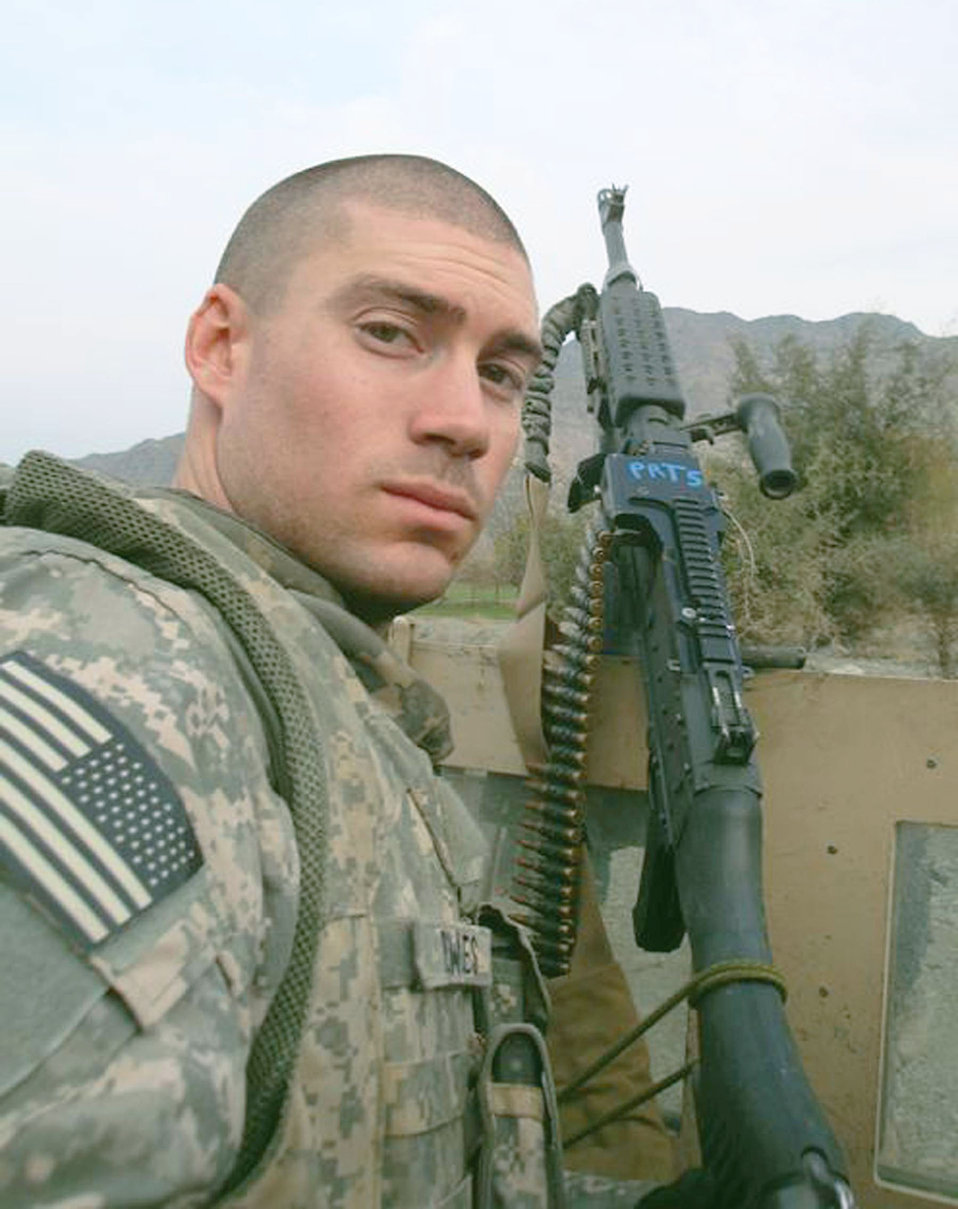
Elmendorf officials mourn loss of Airman

Staff Sgt. Timothy Bowles was killed when his vehicle was destroyed by an improvised explosive device while on a four-vehicle patrol checking on a local school March 15 in Eastern Afghanistan. He was deployed from Elmendorf Air Force Base, Alaska.